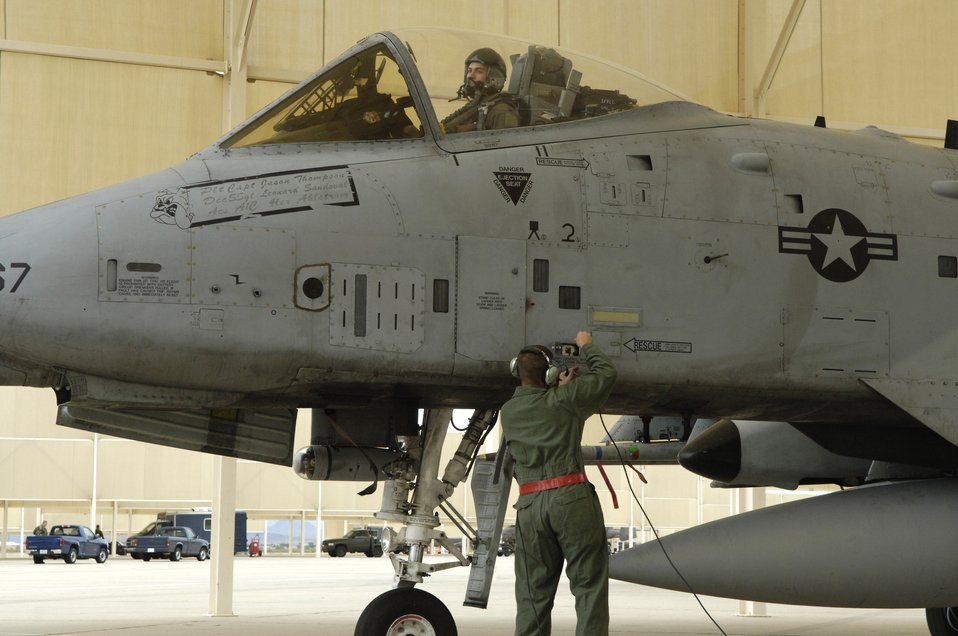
Taking an A-10 from pre-flight to flight

Tech. Sgt. Jerome Westbrook disconnects the direct communication cable as Capt. Andrew Tenenbaum prepares to taxi his A-10 Thunderbolt II Oct. 29. Sergeant Westbrook is assigned to the 355th Aircraft Maintenance Squadron and Captain Tenenbaum is a pilot in the 354th Fighter Squadron at Davis-Monthan Air Force Base, Ariz.